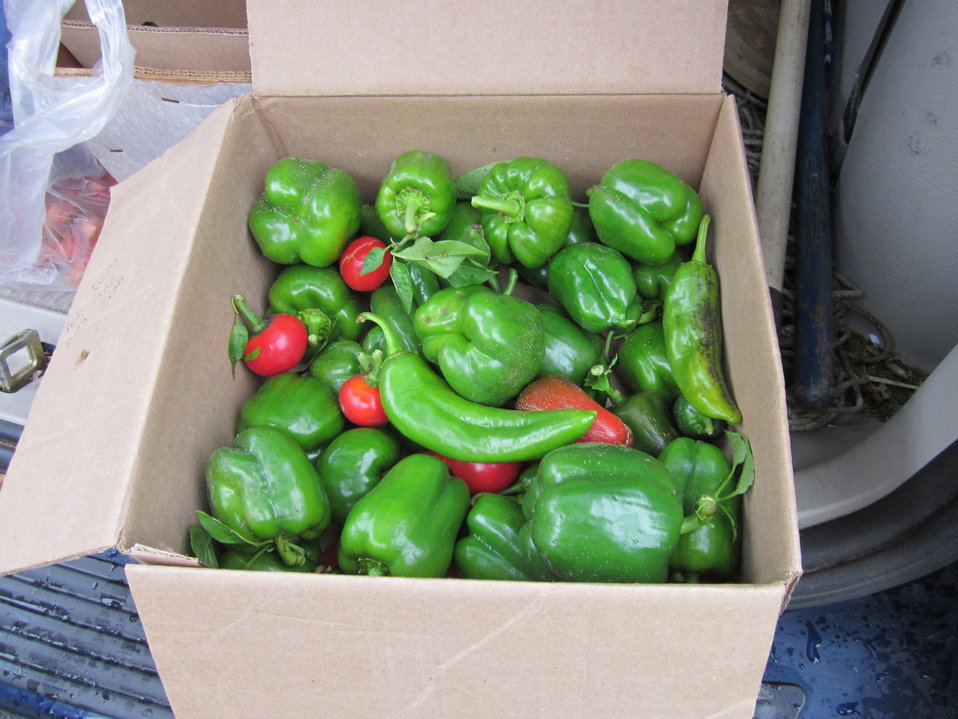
Veggies for veterans

October 12, 2012, Sunderland, MA: Vegetables harvested from the Veterans' Garden at the U.S. Fish and Wildlife Service's Richard Cronin National Salmon Station are ready to go to local veterans. Volunteer Bob O'Neil picked them before the first hard frost of the season.